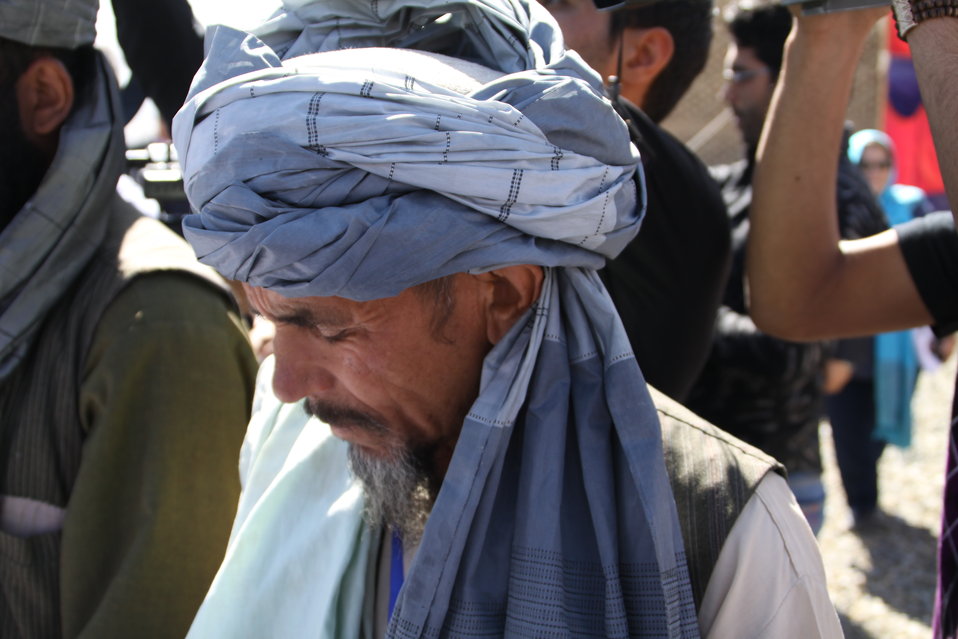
AVIPA Plus Wheat Seed Distribution 101005

US Ambassador Karl Eikenberry and USAID Acting Mission Director Kevin Brownawell joined the Minister of Agriculture, Irrigation and Livestock, H.E. Minister Mohammed Rahimi in signing a Memorandum of Understanding and distributing vouchers to area farmers for wheat and fertilizer.

US Ambassador Karl Eikenberry and USAID Acting Mission Director Kevin Brownawell joined the Minister of Agriculture, Irrigation and Livestock, H.E. Minister Mohammed Rahimi in signing a Memorandum of Understanding and distributing vouchers to area farmers for wheat and fertilizer.